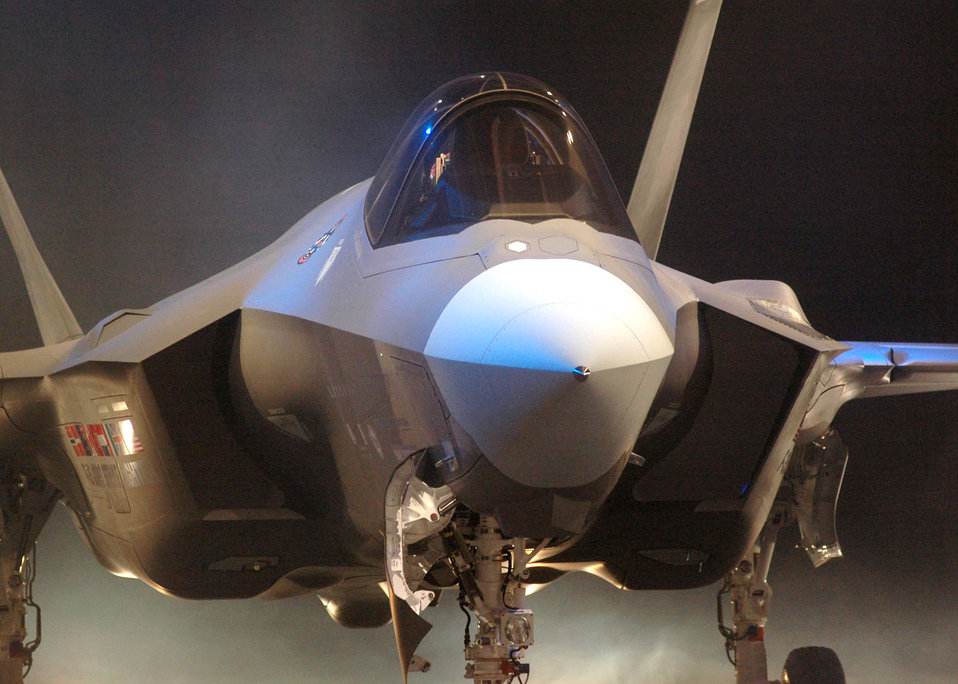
Lightning II makes its debut

Air Force Chief of Staff Gen. T. Michael Moseley announced Lightning II as the F-35 name during a Joint Strike Fighter inauguration ceremony July 7 at the Lockheed Martin Aeronautics Co. at Fort Worth, Texas. The F-35 Lightning II is the next generation strike fighter bringing cutting-edge technologies to the battlespace of the future. The Lightning II features an advanced airframe, autonomic logistics, avionics, propulsion systems, stealth and firepower.